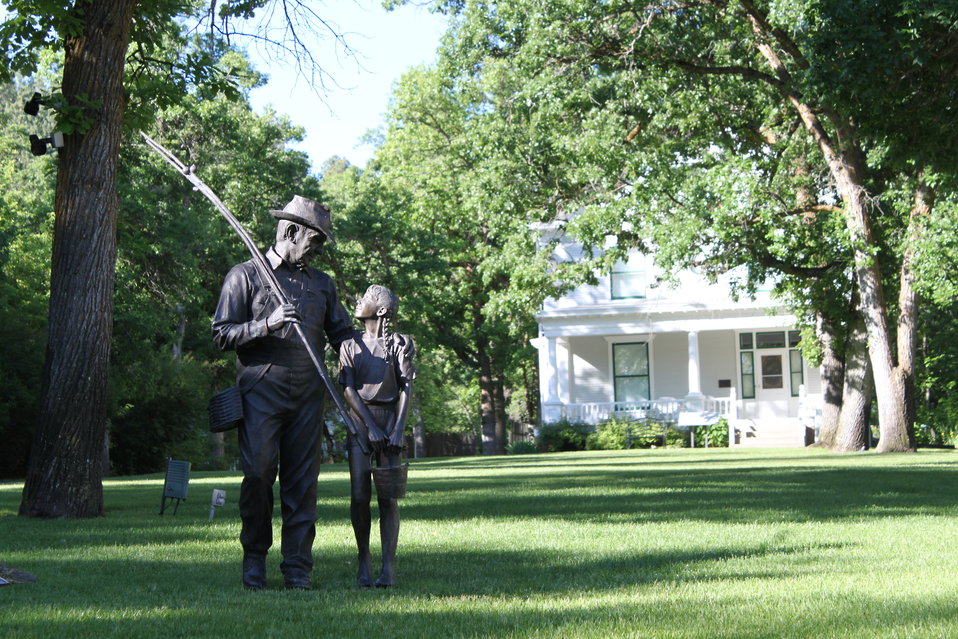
Generations

The bucolic image of a grandparent and grandchild going fishing evokes nostalgia and hope for the future. Conservation is, after all, an investment in the future. Fishing has introduced imnumerable Americans to a conservation ethic. This sculpture stands on the grounds of the D.C. Booth Historic National Fish Hatchery & Archives in Spearfish, South Dakota.

Credit: Craig Springer / USFWS

Photo Contest Entry #146